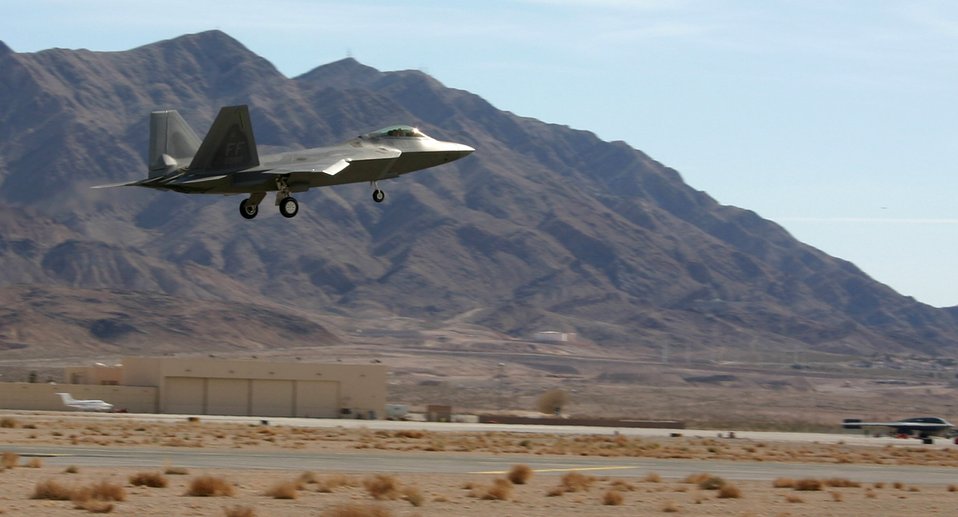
Red Flag turns stealthy

An F-22 Raptor after a Red Flag mission Feb. 12 at Nellis Air Force Base, Nev. All three of the Air Force's stealth aircraft models -- the B-2 Spirit, F-117 Nighthawk and F-22 -- are taking part in Red Flag, which sharpens aircrews' warfighting skills in realistic combat situations. Crews are flying missions during the day and night to the nearby Nevada Test and Training Range where they take part in highly realistic aerial combat. The Air Force and Navy, along with Australia and the United Kingdom militaries, are participating in this Red Flag.